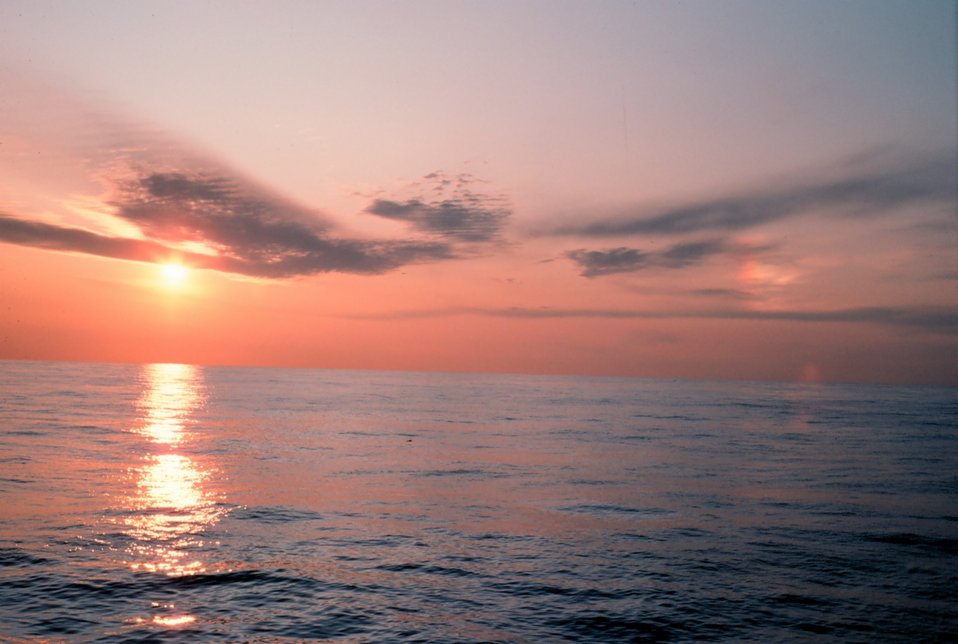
A setting sun over the ocean with a sundog to the right.